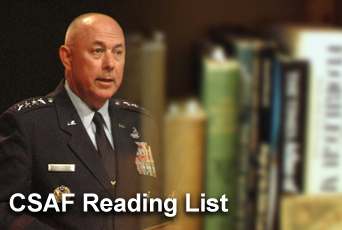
Heritage abound: CSAF adds books to Air Force Reading List

The Chief of Staff of the Air Force reading list can be accessed at www.af.mil/library/csafreading. The books will also be available through Air University, Maxwell Air Force Base, Ala., and Air Force libraries.